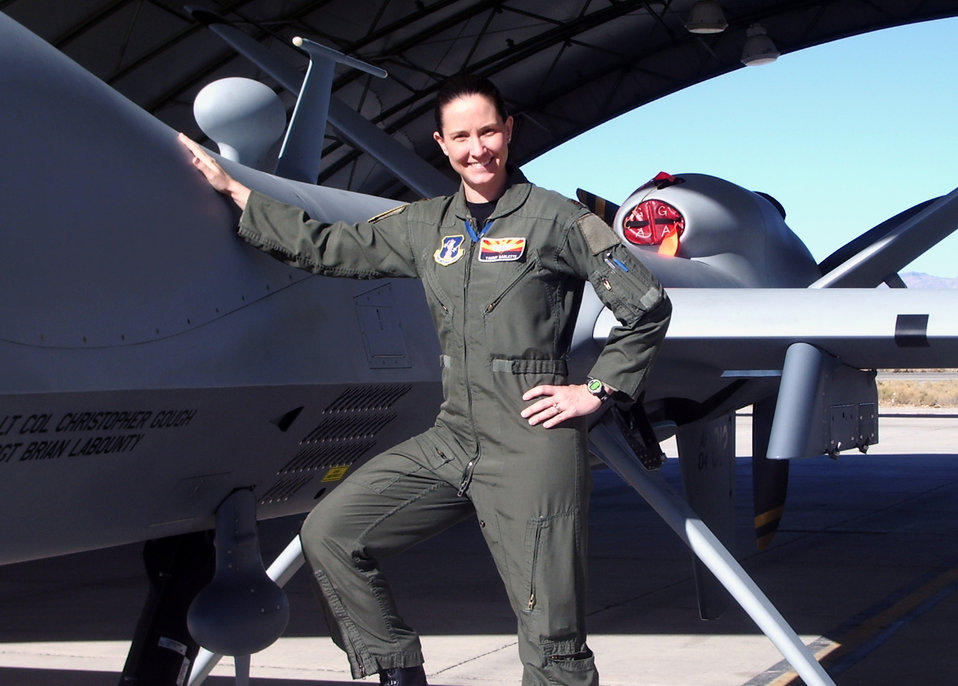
Weapons course grad

Maj. Tammy Barlette gets familiar with an MQ-9 Reaper at Nellis Air Force Base, Nev. She is the first Air National Guard unmanned aircraft pilot to graduate from the Air Force's Weapons Instructor Course. She is assigned to the Arizona Air National Guard's 214th Reconnaissance Group at Davis-Monthan Air Force Base.